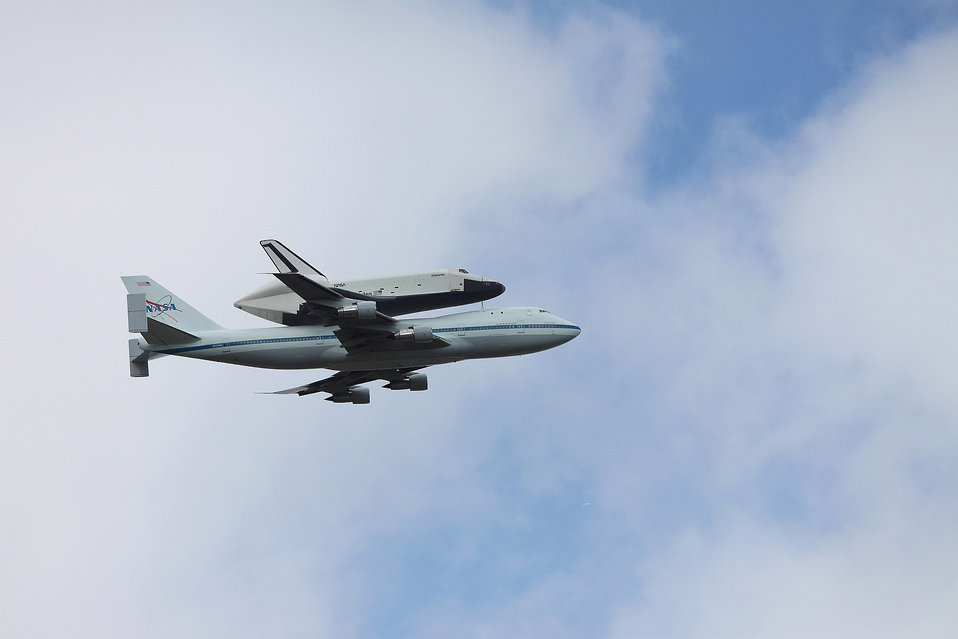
Enterprise's farewell tour

Space shuttle farewell tour over ny.